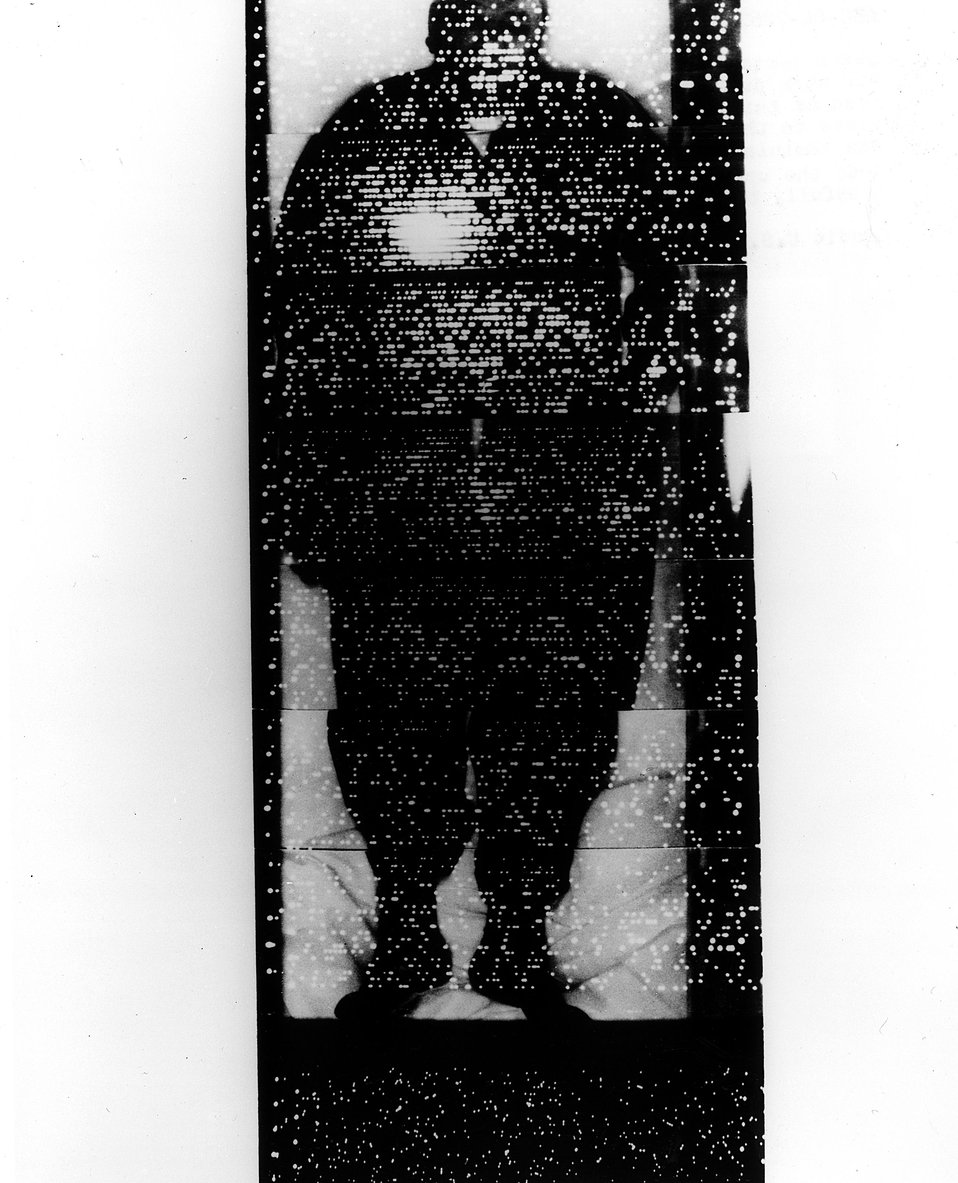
Seven serial scans made with the whole body scanner were put together to provide a whole body scan of this patient with thyroid cancer metastasized to the lung. Circa 1964.